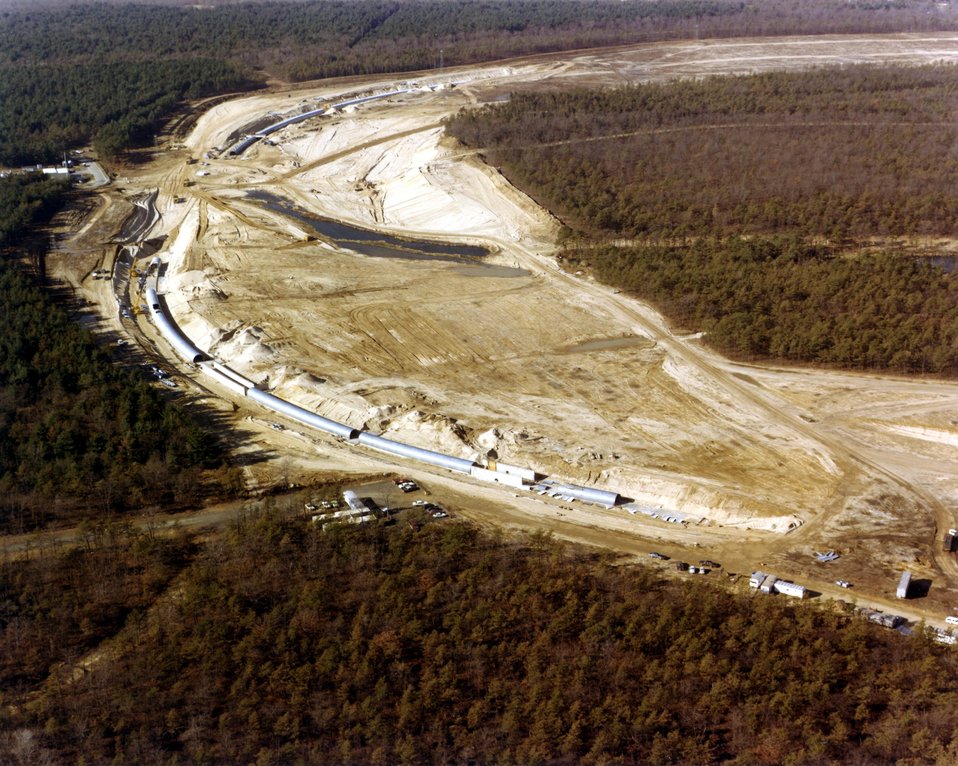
CBA, A PROTON-PROTON COLLIDING BEAM ACCELERATOR TO STUDY THE BASIC STRUCTURE OF ENERGY AND MATTER, IS BEING BUILT ON THE NORTHWEST QUADRANT OF THE 5,250 ACRE BROOKHAVEN SITE. THE FACILITY ITSELF IS AN UNDERGROUND CIRCULAR TUNNEL, WHICH IS 3.8 KILOMETERS IN CIRCUMFERENCE. TWO RINGS OF SUPERCONDUCTING MAGNETS WILL BE INSIDE THE TUNNEL. PROTON BEAMS WILL BE INJECTED INTO THE TUNNEL AND ACCELERATED TO ENERGIES UP TO 400 GEV. AT SIX PLACES ALONG THE TUNNEL, THE BEAMS WILL COLLIDE. EXPERI- MENTAL HALLS, WHICH ENCLOSE THESE SIX INTERSECTIONS, WILL HOUSE EQUIPMENT FOR STUDYING THE RESULTS OF THE COLLISIONS.